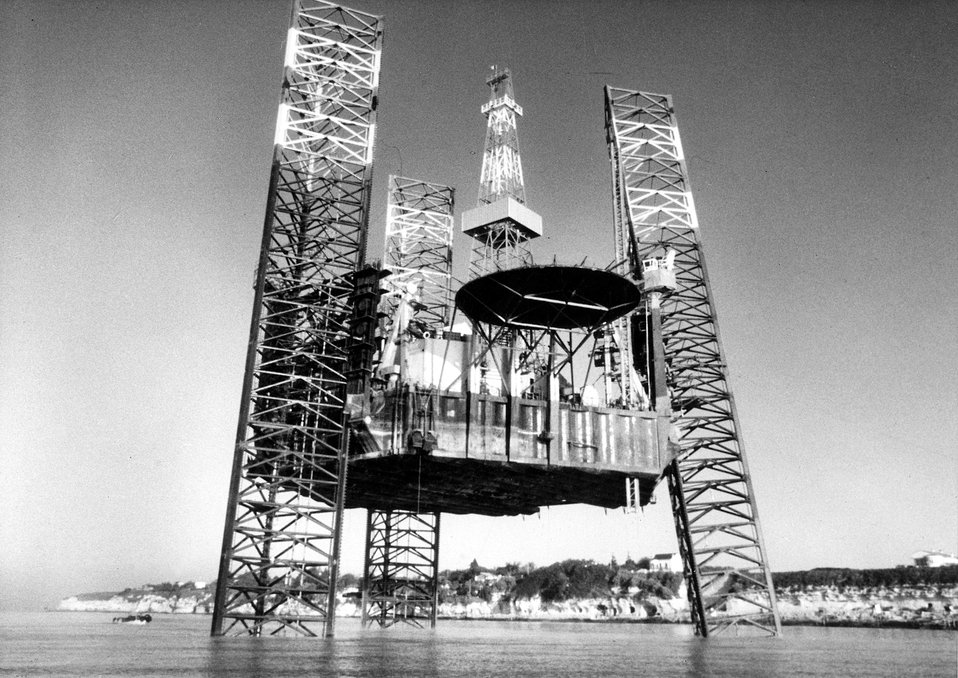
Offshore drilling. c. undated